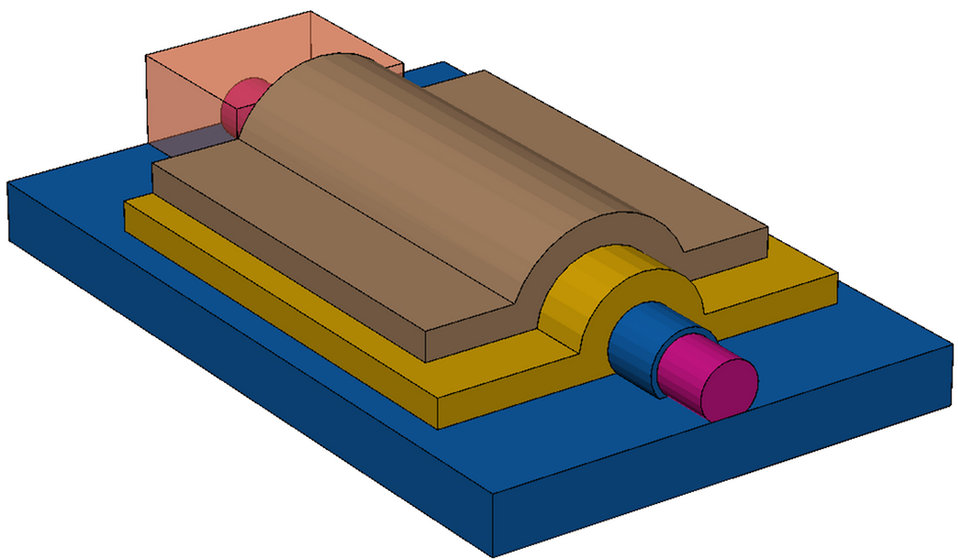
Schematic of silicon nanowire

In this schematic image, a silicon nanowire is shown surrounded by a stack of thin layers of material called dielectrics, which store electrical charge. NIST scientists determined the best arrangement for this dielectric stack for the optimal construction of silicon nanowire-based memory devices.